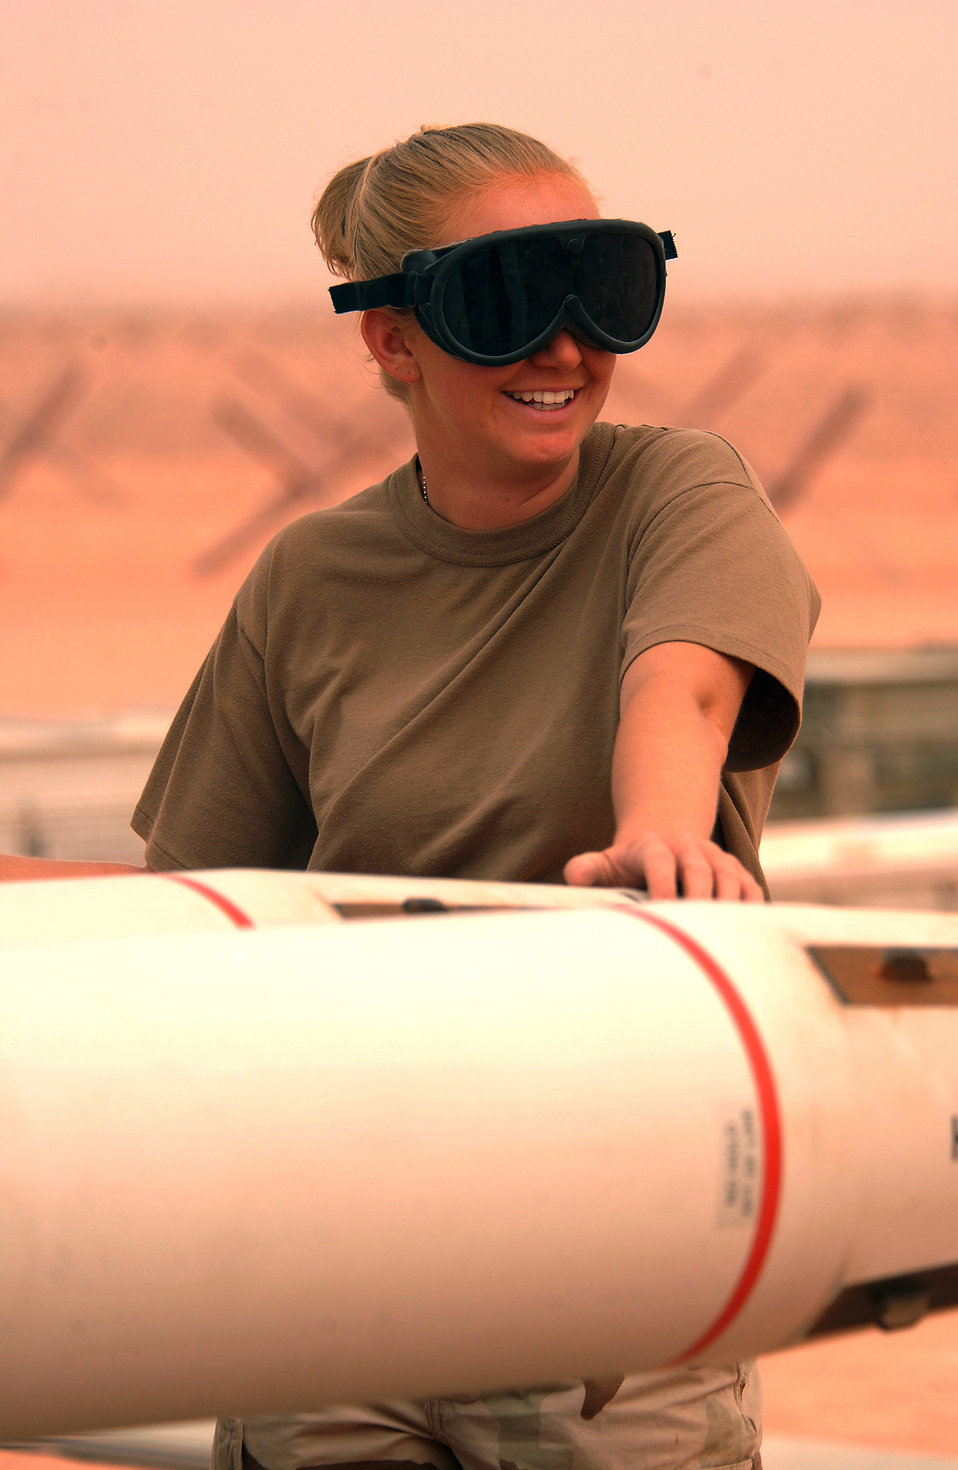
Jones

OPERATION IRAQI FREEDOM (AFPN) -- Senior Airman Lisa Jones loads air-to-ground missiles for an F-16 Fighting Falcon on the flightline at a forward-deployed location March 25. Jones is a precision-guided munitions crew member with the 363rd Expeditionary Equipment Maintenance Squadron. She is deployed from the 18th Fighter Squadron at Kadena Air Base, Japan.